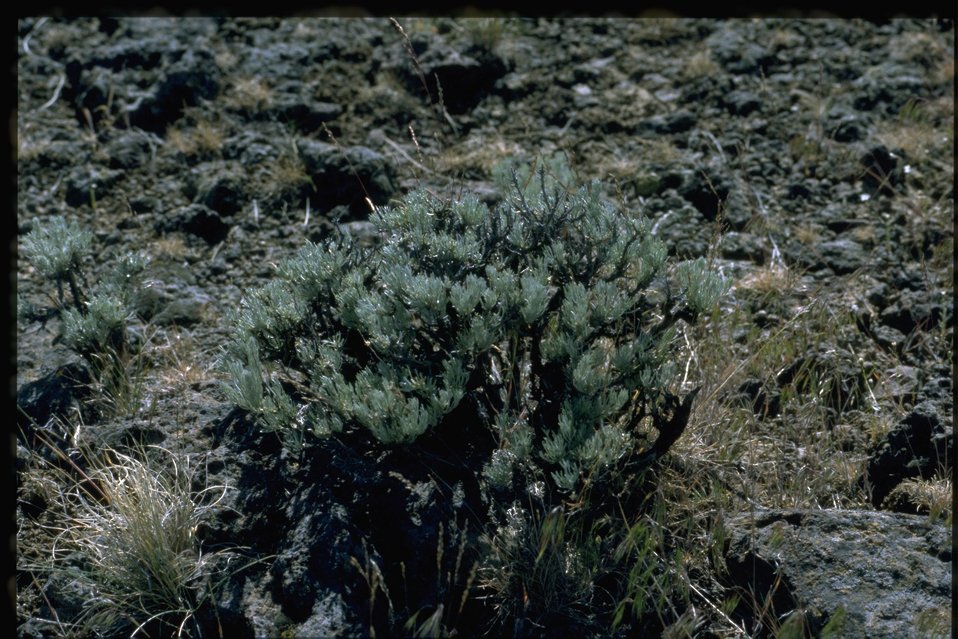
Farshot of scabland sagebrush (Artemisia rigida).